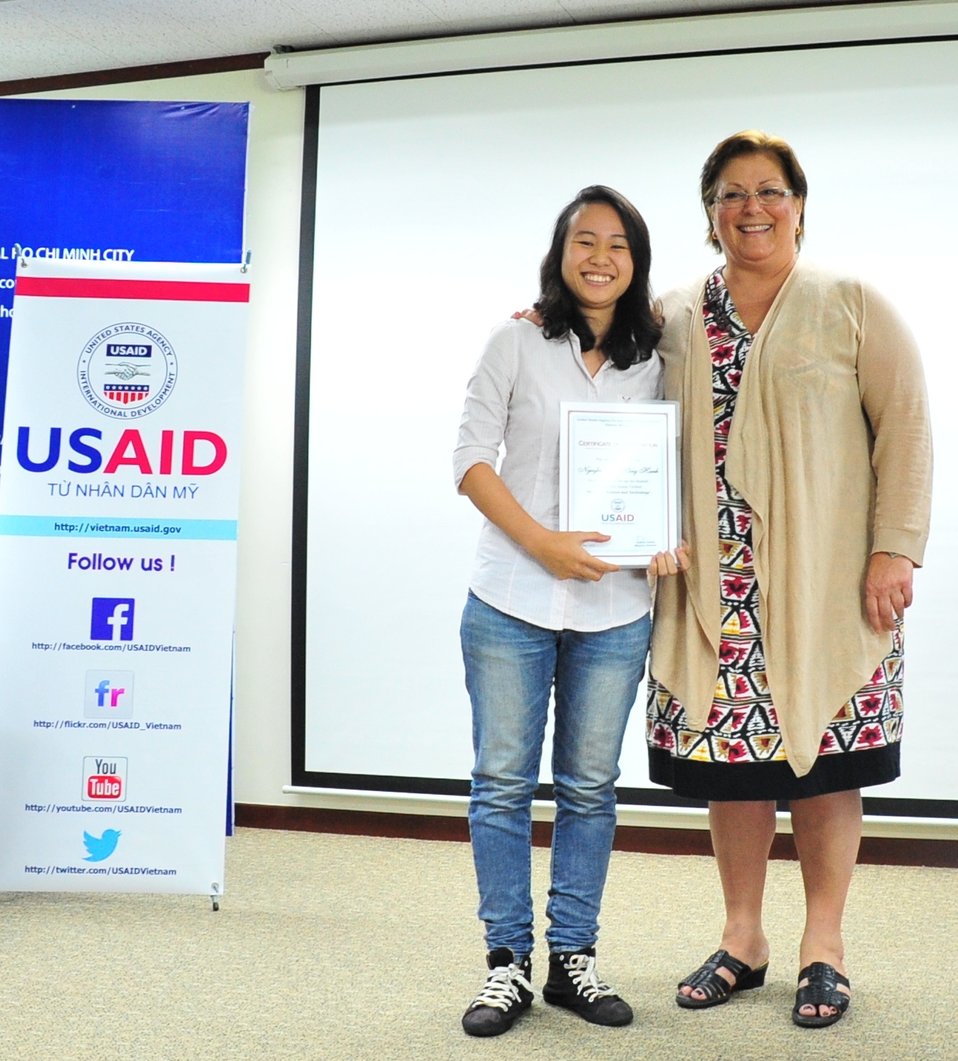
Women in Science and Technology Essay Contest Award Ceremony

U.S. Embassy Deputy Chief of Mission Claire Pierangelo presents a certificate of recognition to Ms. Nguyen Thi Hong Hanh, a student from Ho Chi Minh City University of Social Sciences and Humanities, who is among top 10 finalists in the USAID Women in Science and Technology Essay contest, on May 16, 2013.